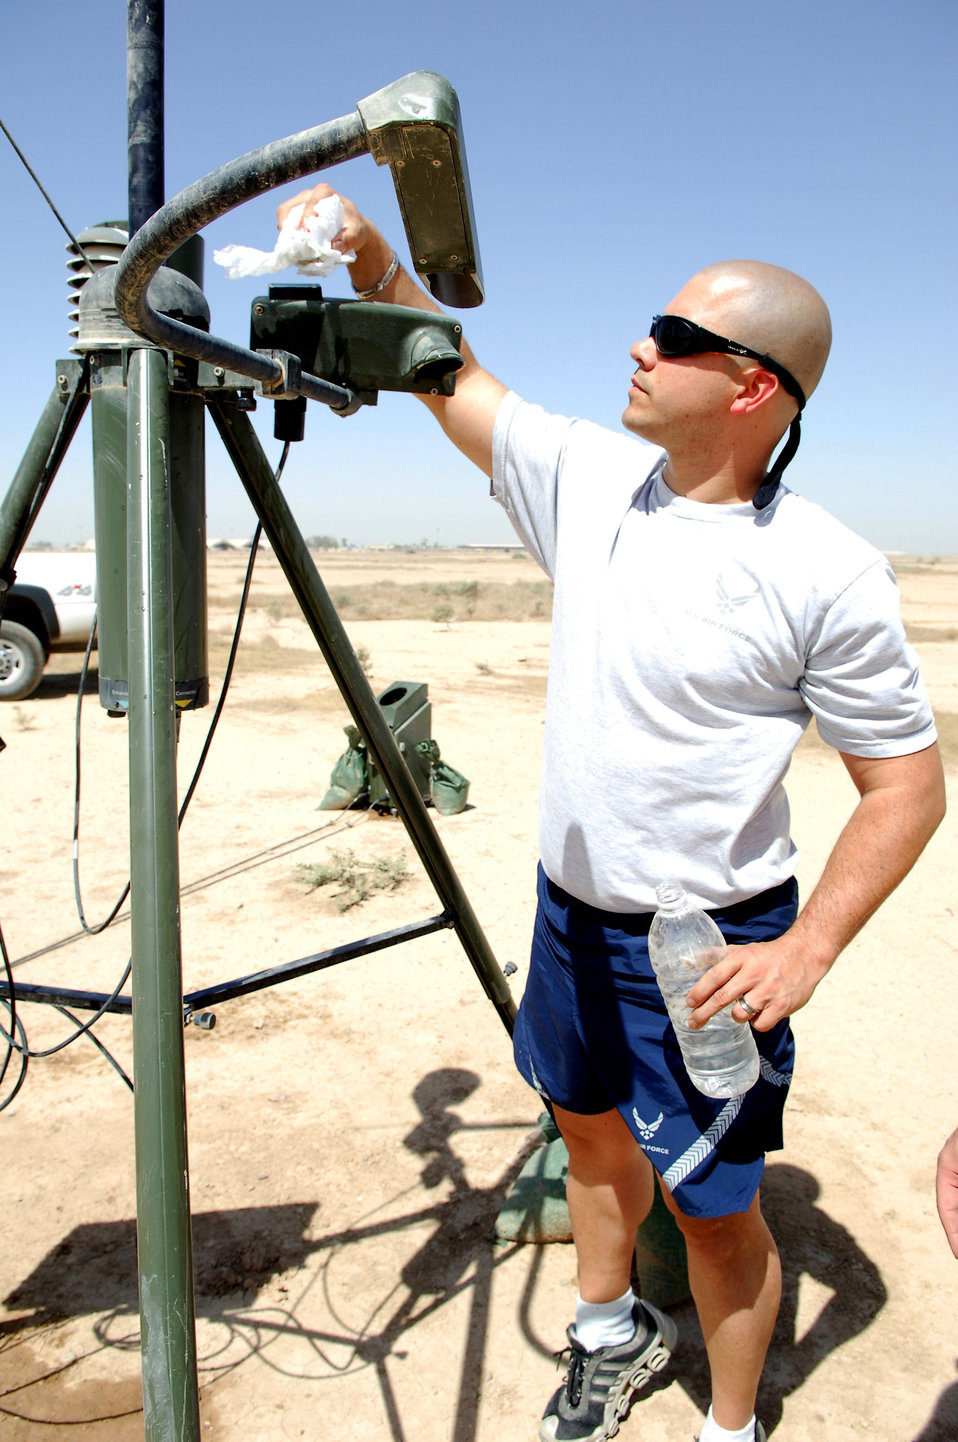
It's a 'shamal world' for combat weather Airmen

Staff Sgt. Donald Blasini cleans the sensors on a piece of tactical weather equipment June 14 at Joint Base Balad, Iraq. The two sensors are about six inches apart and monitor the space between them to determine the visibility on the airfield. Airmen are authorized to wear either the airman battle uniform or physical fitness uniform when cleaning the weather equipment. Sergeant Blasini is a a 332nd Expeditonary Operations Support Squadron combat weather forecaster deployed from Shaw Air Force Base, S.C.